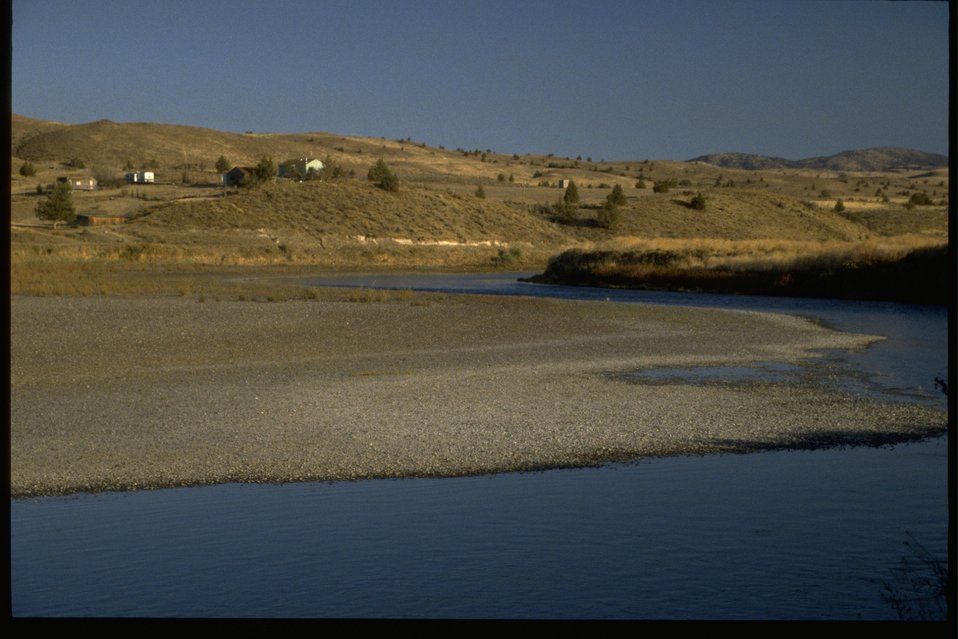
Private farm across the John Day River from BLM land.